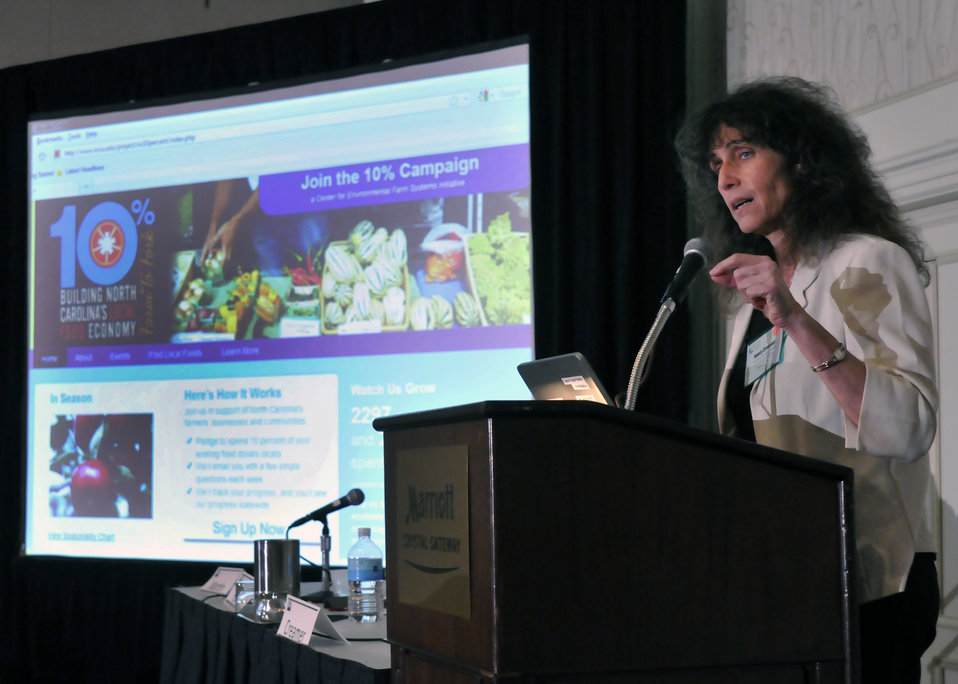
Nancy Creamer, Director, Center for Environmental Farming Systems, North Carolina State University, Raleigh, North Carolina discusses “A Comprehensive Approach to Building North Carolina’s Regional Food Economy” at the “Promoting Sustainable Agriculture Through Regional Food Sheds” at the World Agricultural Outlook Board Forum in Crystal City, VA, Thursday, February 24, 2011.